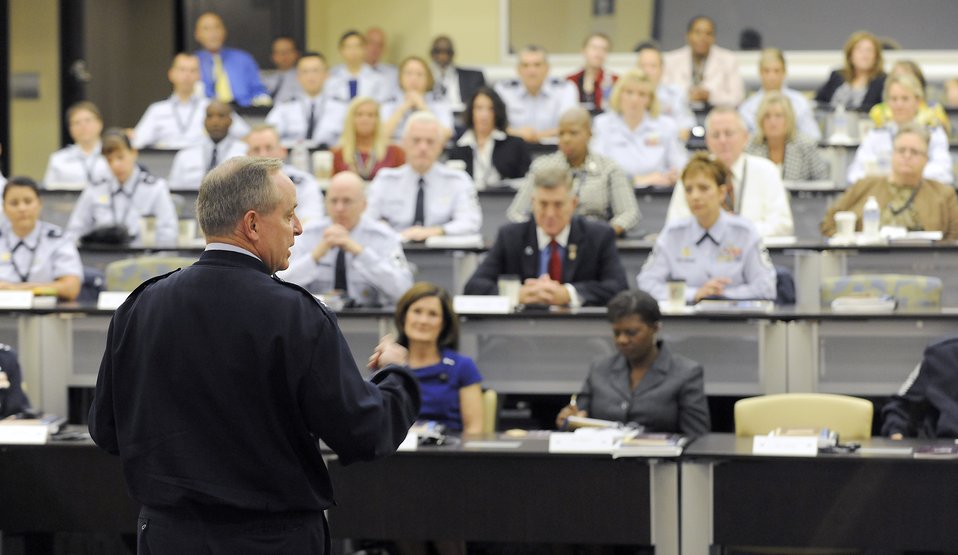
In the front

Air Force Chief of Staff Gen. Mark A. Welsh III makes remarks at the Caring for People Forum at Joint Base Andrews, Md., on Sept. 26, 2012. This is the fourth annual forum which provides strategies for commanders, leaders and care professionals to help Airmen and their families.